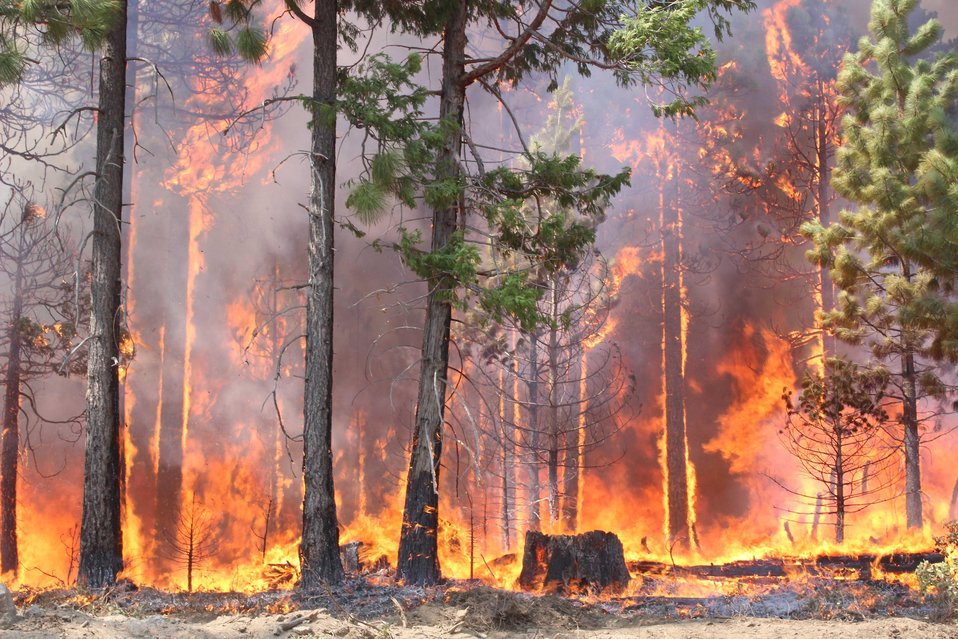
The Rim Fire in the Stanislaus National Forest near in California began on Aug. 17, 2013 and is under investigation. The fire has consumed approximately 235,841 acres and is 70% contained.